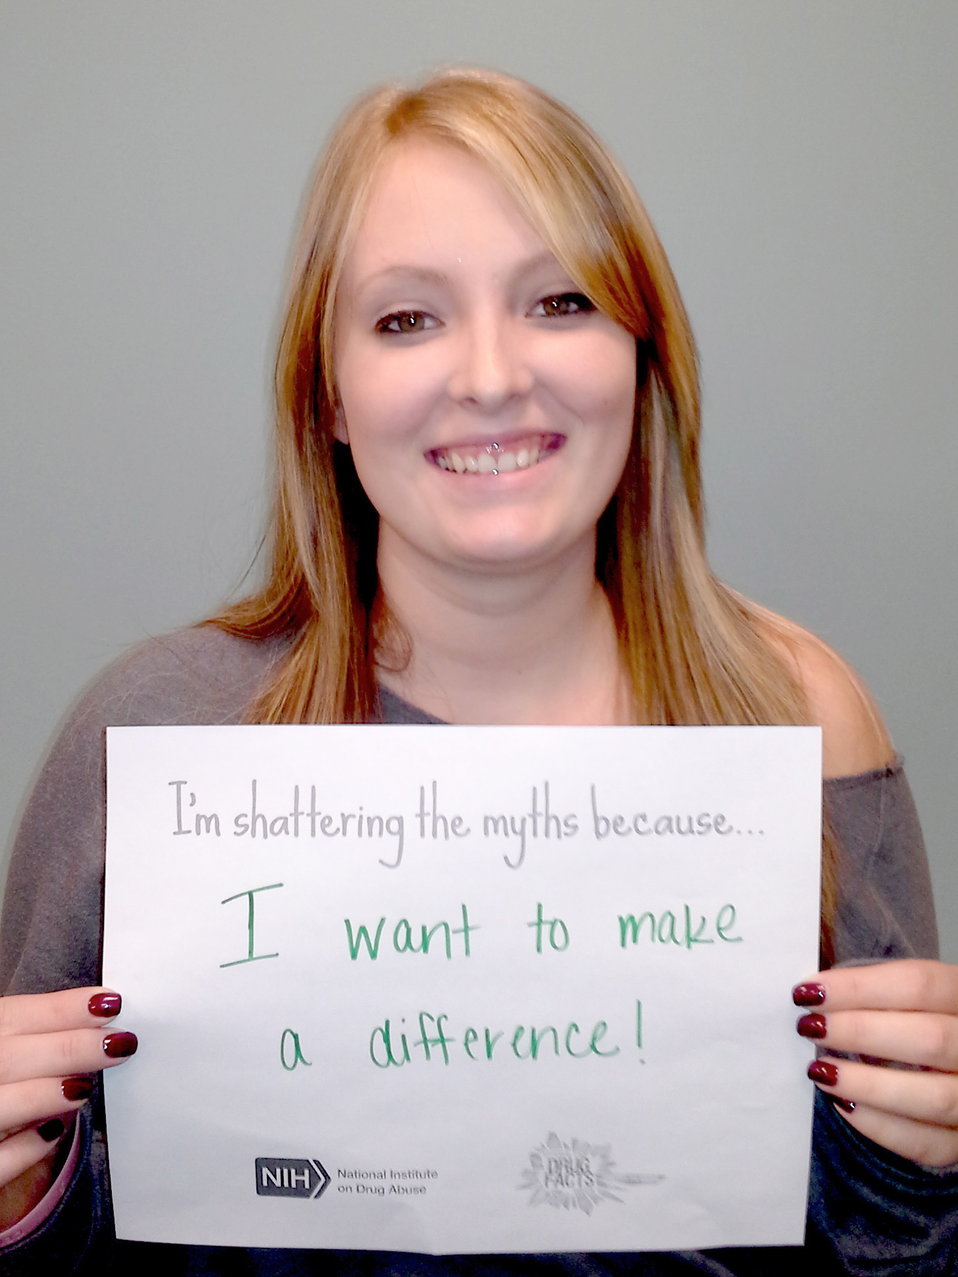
Shattering the Myths campaign in Winona, Minnesota